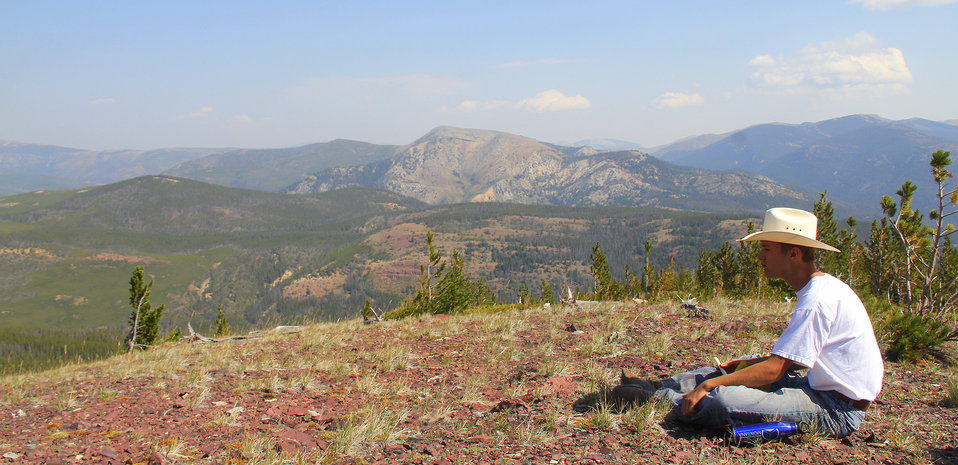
wilderness50 Jackson Hart Untrammeled2

Missoula, MT native Jackson Hart has a panoramic view of the Scapegoat Wilderness Area in Montana as he writes in his journal during the filming of “Untrammeled'. The trip and video were done with the support and collaboration of partners and the U.S. Forest Service, as part of a year-long commemoration of the Wilderness Act of 1964.